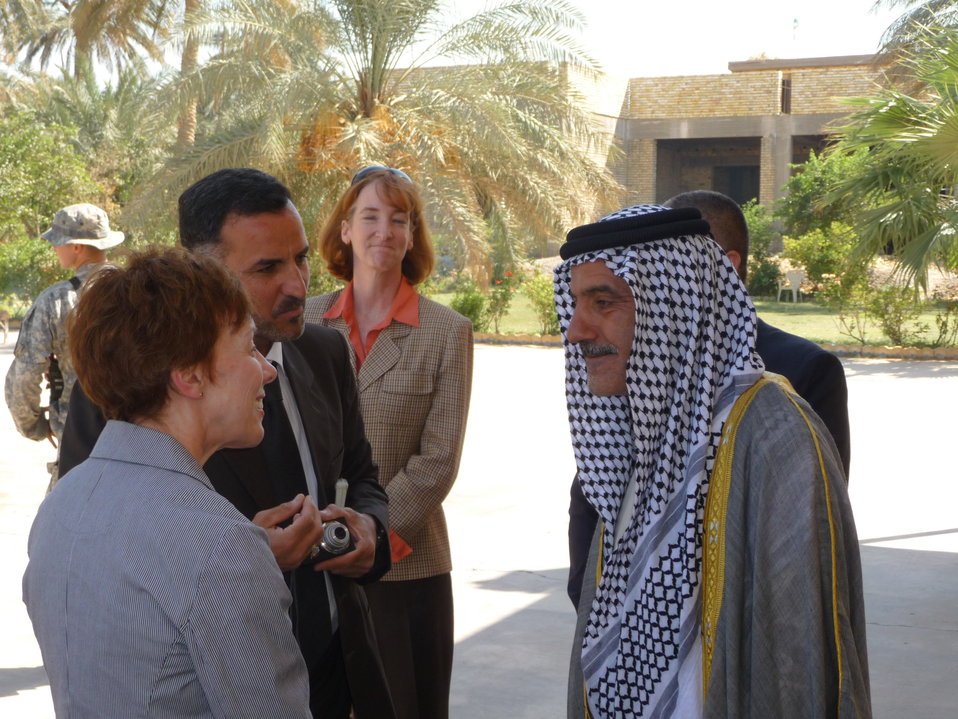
Lisa Piascik Meets With Ra'ad

Lisa Piascik of PRT Diyala meets with former Diyala Provincial Governor Ra’ad in Baqubah, Iraq, October 2009.